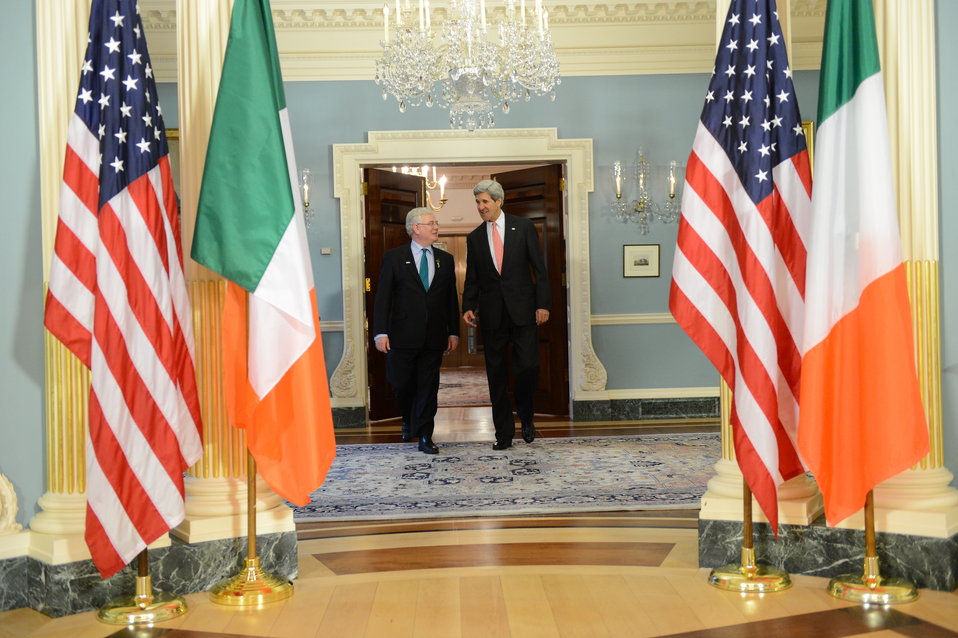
Secretary Kerry and Tánaiste Eamon Gilmore Prepare To Address Reporters

U.S. Secretary of State John Kerry and Tánaiste Eamon Gilmore prepare to address reporters after their bilateral meeting at the U.S. Department of State in Washington, D.C., on March 18, 2013.